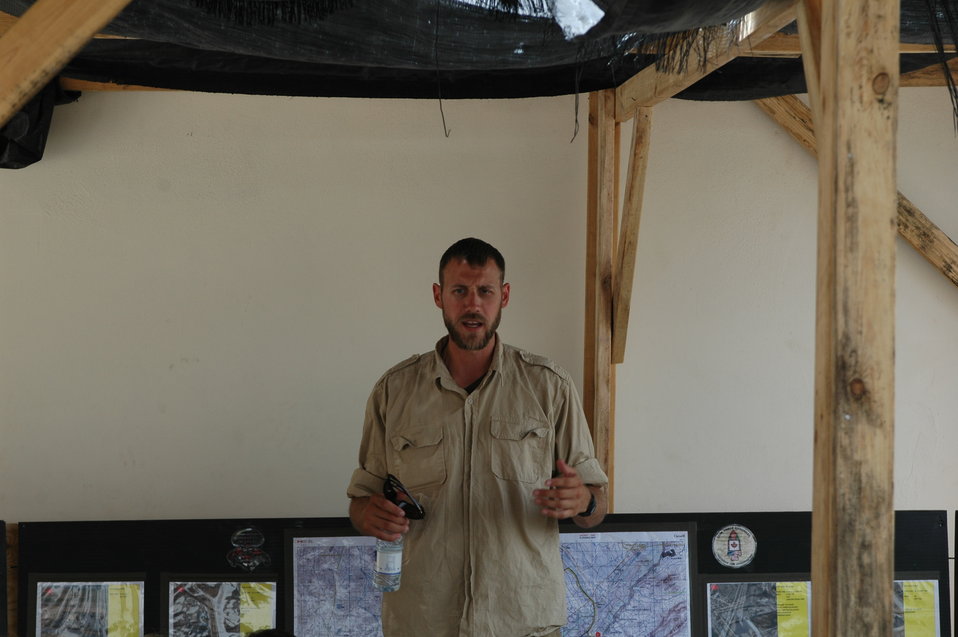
CODEL Berman